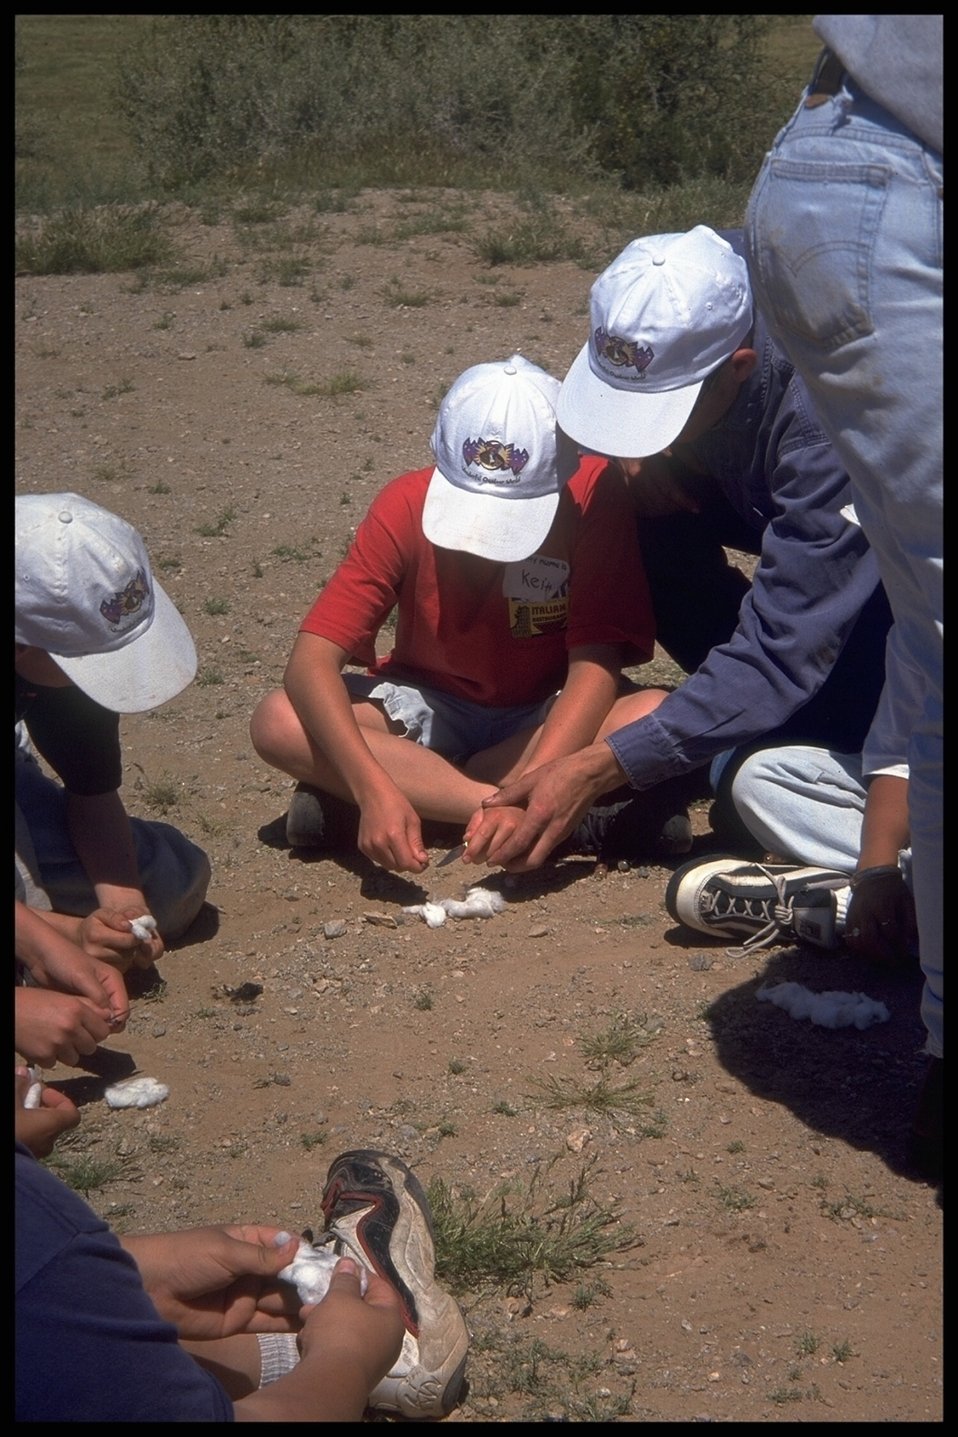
Children learn the fundamentals of caring for the environment.